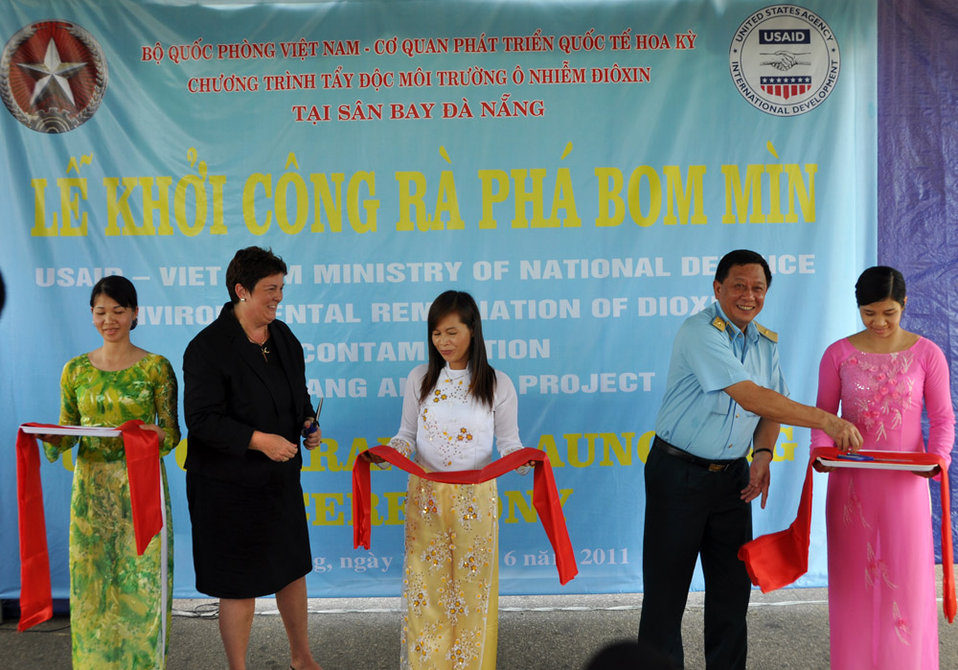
UXO clearance ceremony, June 17, 2011, in Danang, Vietnam.